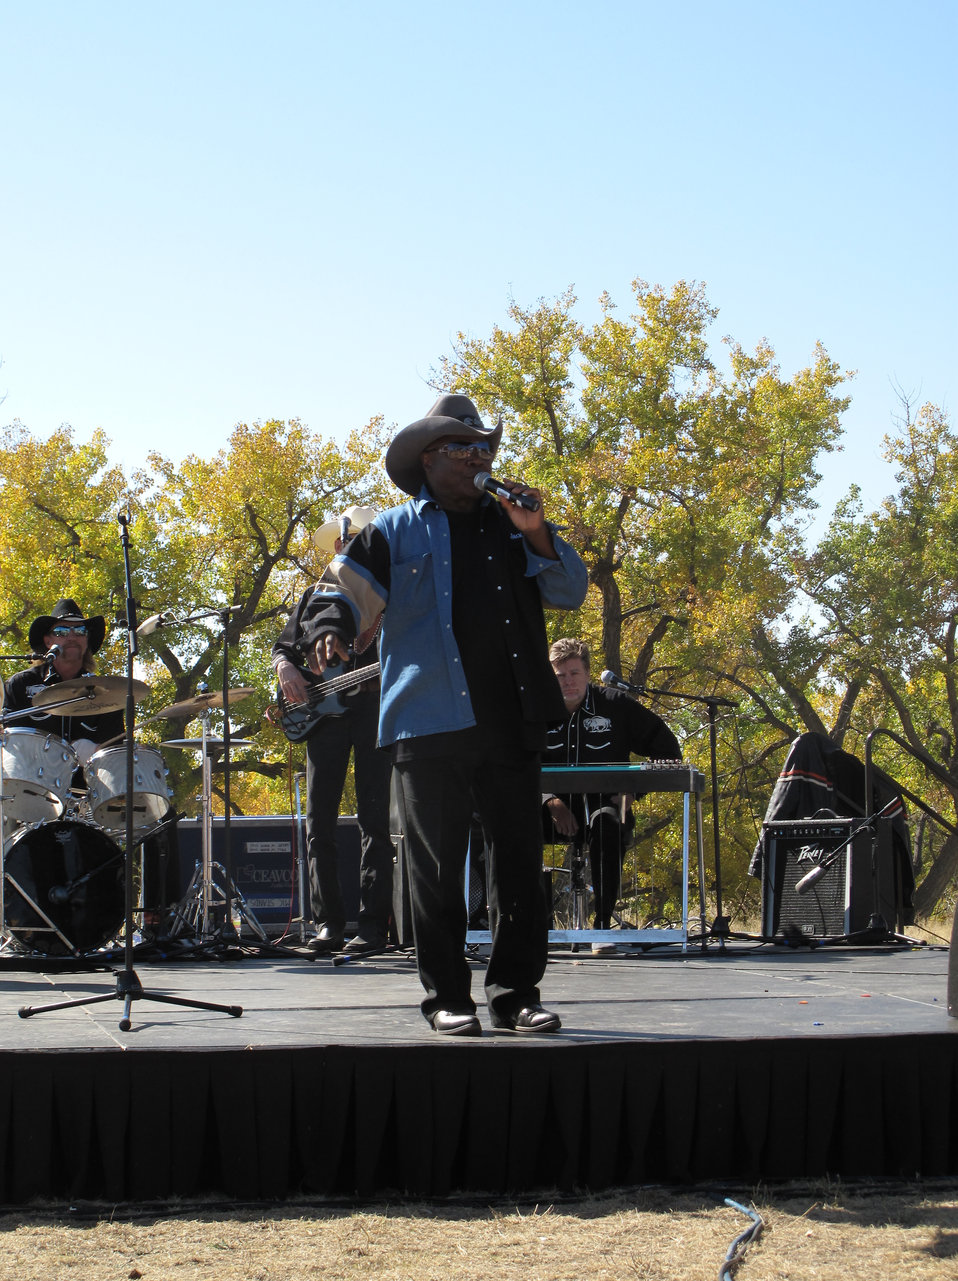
Refuge Round-up 2010

Rudy Grant and the Buffalo Riders.